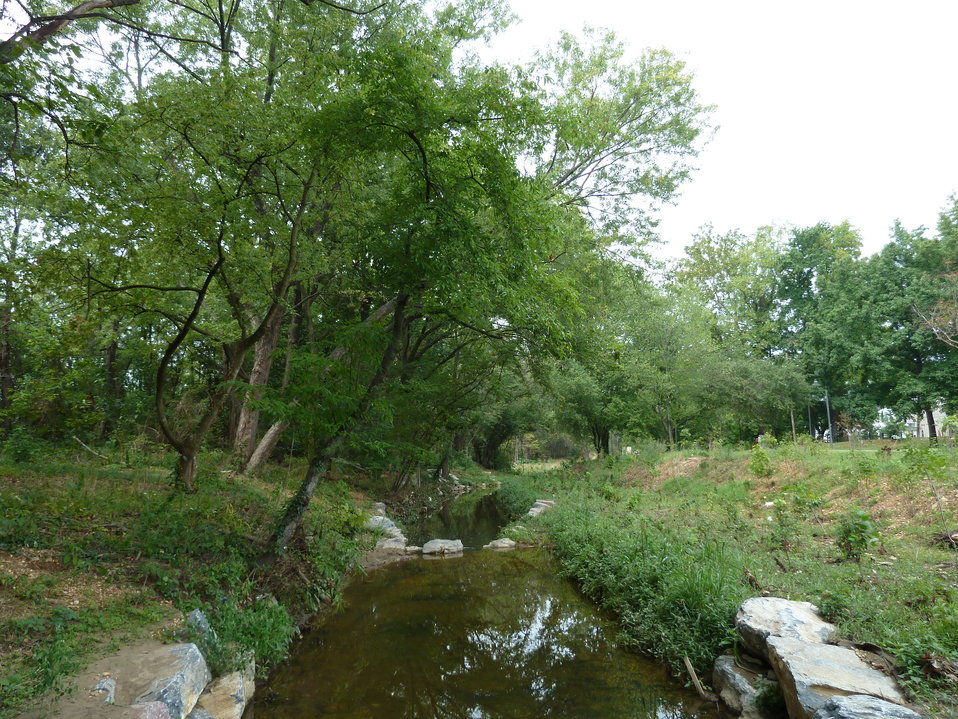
Restoring an urban stream (after)

Watts Branch now provides streamside (riparian) and instream habitat for local fish and wildlife in the Anacostia River watershed.